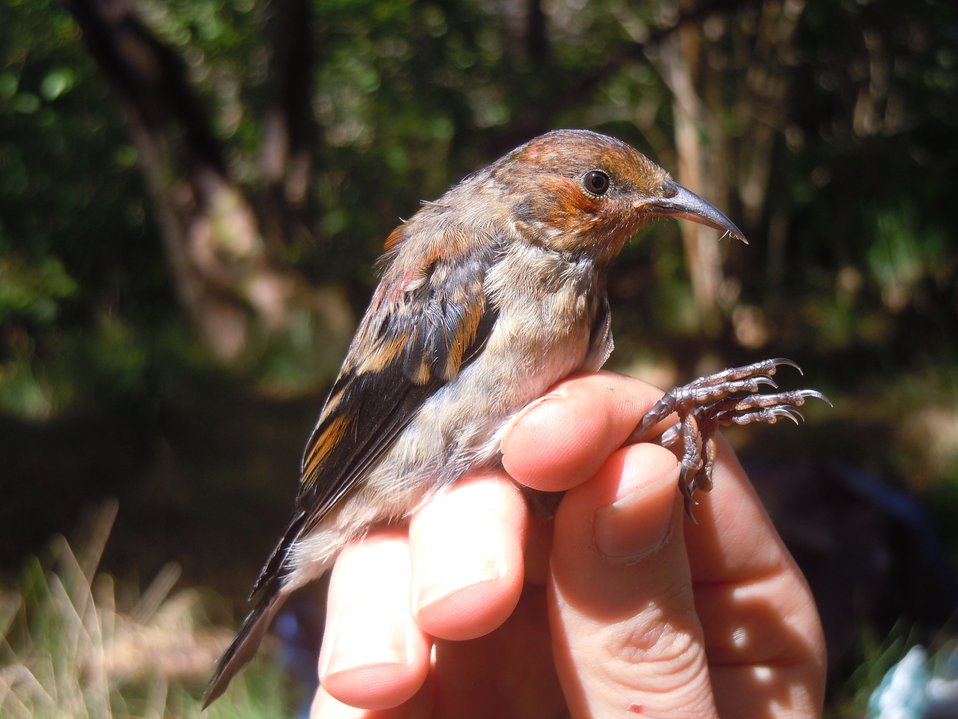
juvenile 'Apapane

The endangered 'Apapane evolved in the forests of Hawai'i and is found nowhere else in the world. This bird was banded and released back to the forest.
Hakalau Forest National Wildlife Refuge, HI
March 2012